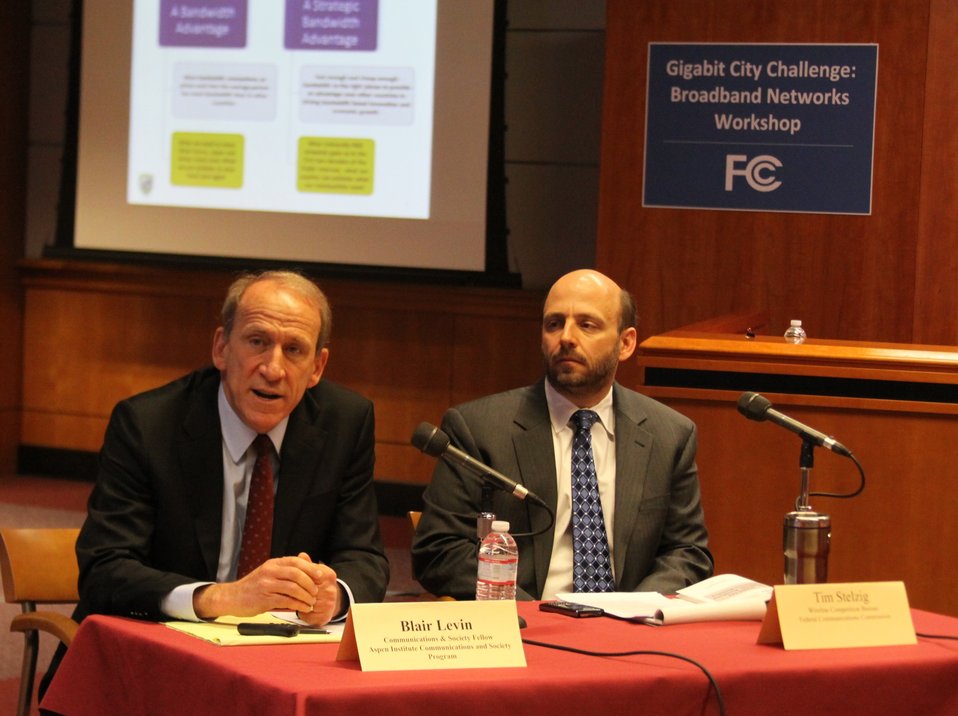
March 27, 2013 Gigabit City Challenge: Broadband Networks Workshop Panel 3: Innovation in Demand Aggregation, moderated by Blair Levin, Communications and Society Fellow, Aspen Institute Communications and Society Program